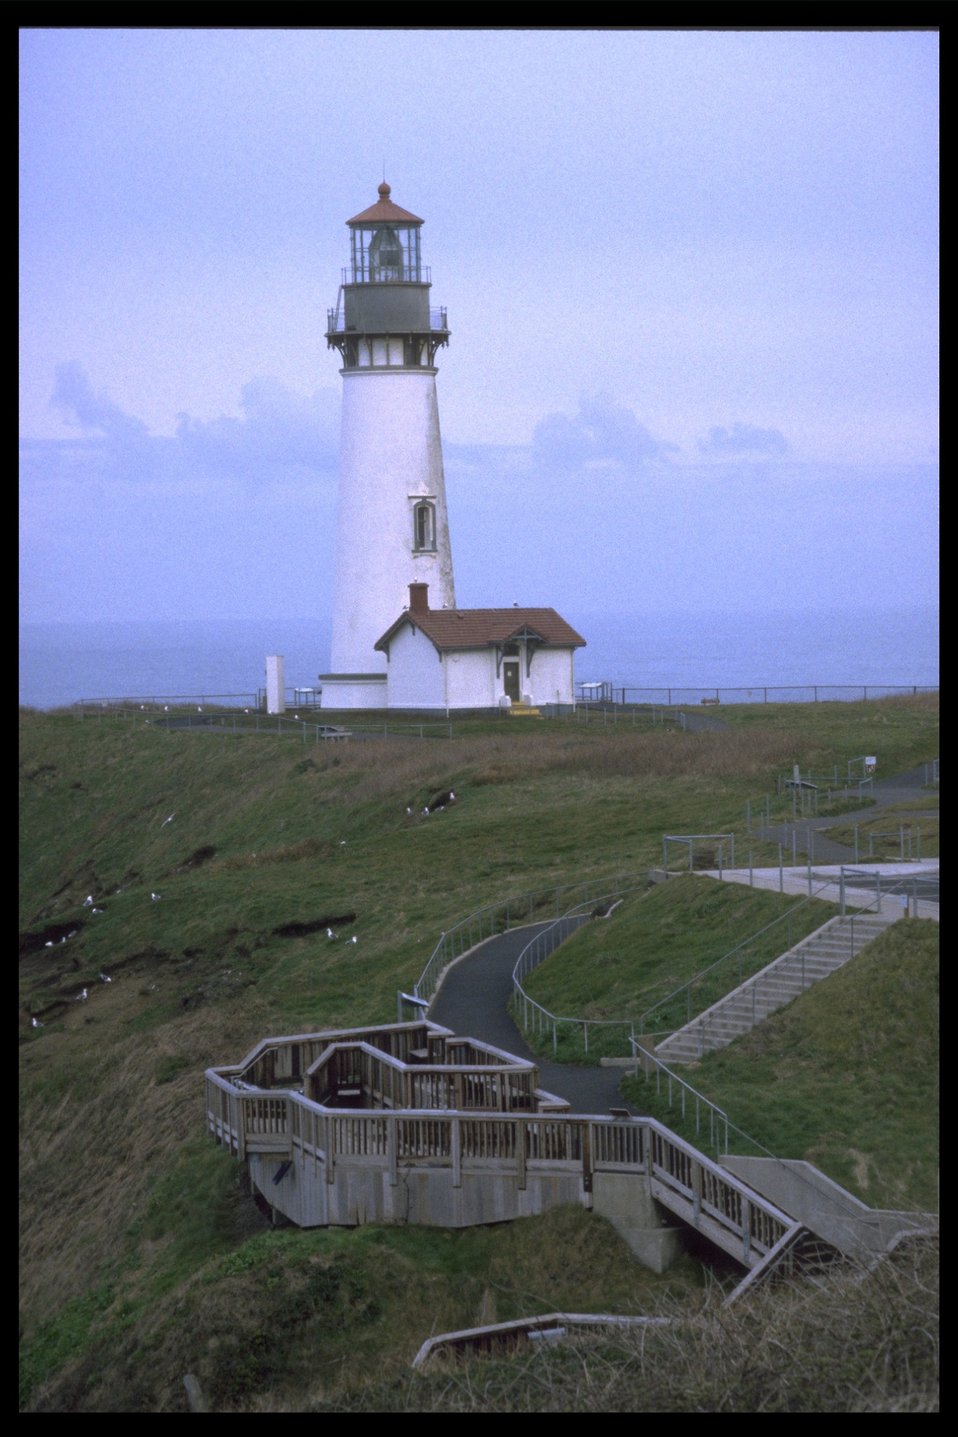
Yaquina Head Lighthouse.